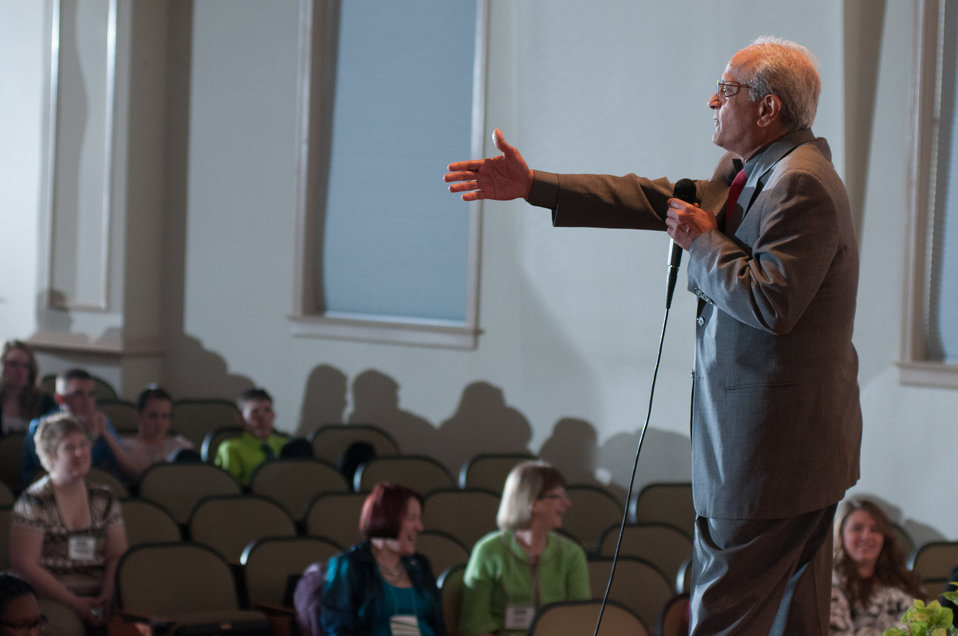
U.S. Department of Agriculture (USDA National Institute of Food and Agriculture Director Dr. Sonny Ramaswamy opened his address about to approximately 300 4-H youth members of the 2013 National 4-H Conference, with a challenge question: “What is the most daunting challenge facing humanity?” The resulting address lead to information about educational opportunities. He closed with a quote from philosopher Confucius: “Find a job you love and you will never have to work again.” on Monday, April 8, 2013 in Chevy Chase, MD. The youth delegates are in grades 10-12 (15-19 years old). The purpose of the conference is to 1) engage 4-H youth in personal development experiences that will increase knowledge, resources, and skills; 2) discuss topics affecting youth and 4-H programming nationwide; and 3) empower and mobilize 4-H youth to create positive social change in their communities in a meaningful and genuine way. The conference also reinforces the rich history of 4-H and its valuable tie to USDA, Cooperative Extension and the Land-Grant University System.